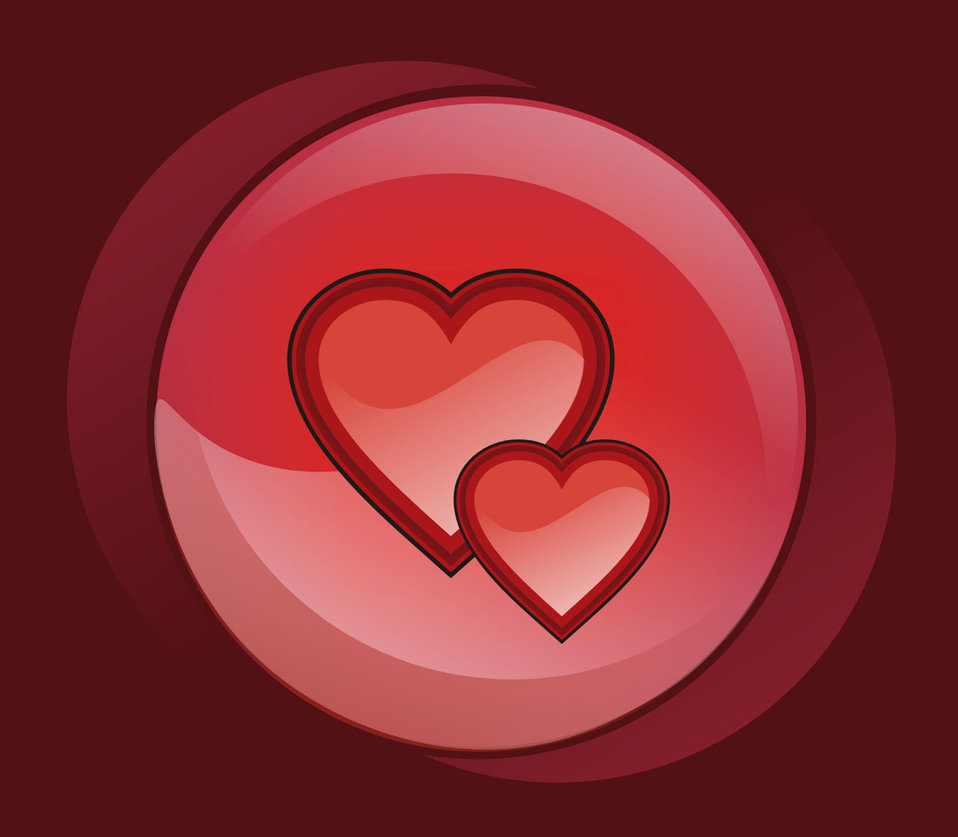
Pair of hearts - background, button or icon, design element.